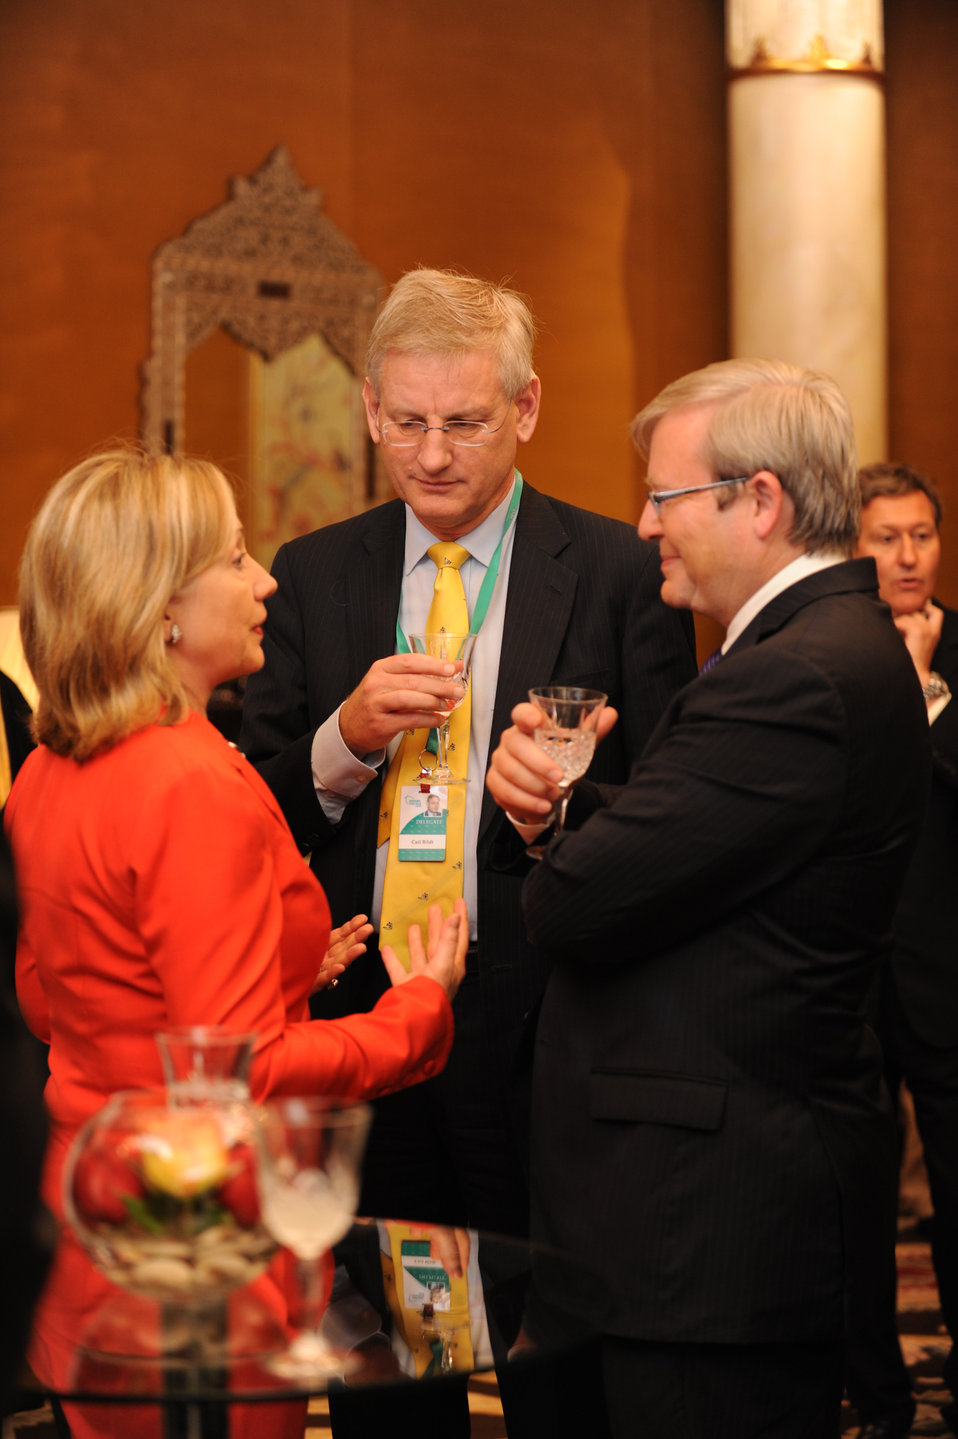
Secretary Clinton Speaks With Australian Foreign Minister Rudd

U.S. Secretary of State Hillary Rodham Clinton speaks with Australian Foreign Minister Kevin Rudd, right, at the opening dinner of the Seventh IISS Regional Security Summit Manama Dialogue in Bahrain, December 4, 2010.